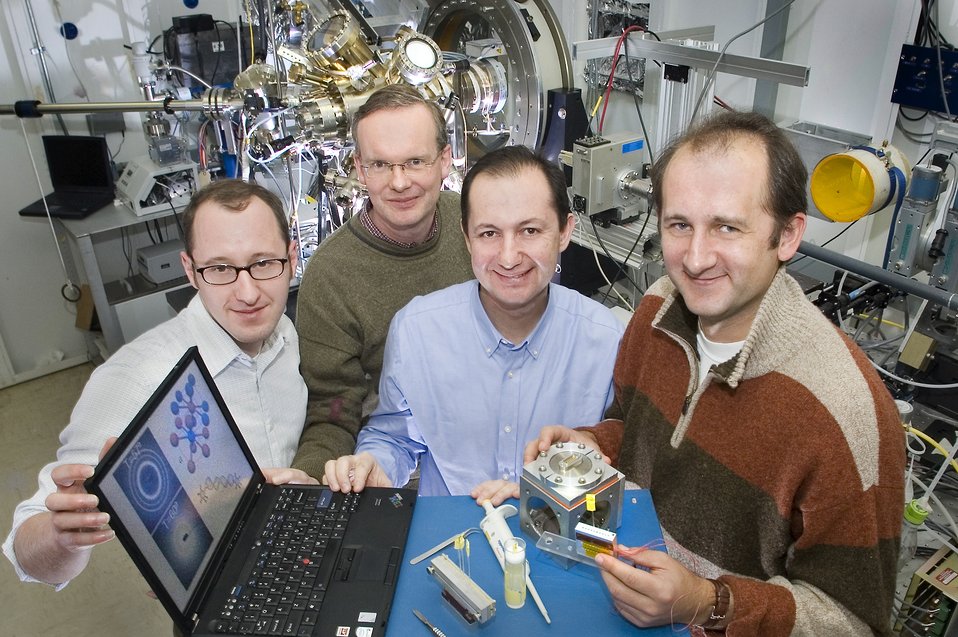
SCIENTISTS AT BNL CENTER FOR FUNCTIONAL NANOMATERIALS -1ST TIME USED DNA - GUIDE THE CREATION THREE-DIMENSIONAL, ORDERED CRYSTALLINE STRUCTURES OF NANOPARTICLES (PARTICLES WITH DIMENSIONS MEASURED IN BILLIONS OF A METER)

AT BNL, IN ORDER TO ACHIEVE ORDER CRYSTALS, THE SCIENTIST ALTAR THE PROPERTIES OF DNA AND BORROW SOME TECHNIQUES KNOWN FOR TRADITIONAL CRYSTALS. THEY HEAT SAMPLES OF DNS LINKED PARTICLES AND THEN COOL THEM BACK TO ROOM TEMPERATURE. THIS THERMAL PROCESSING IS SIMILAR TO ANNEALING USED IN FORMING MORE COMMON CRYSTALS MADE FROM ATOMS. RESULTS FROM A VARIETY OF ANALYSIS TECHNIQUES, INCLUDING SMALL ANGLE X-RAY SCATTERING AND DIFFERENT TYPES OF OPTICAL SPECTROSCOPES AND ELECTRON MICROSCOPY AT THE CENTER FOR FUNCTIONAL NANOMATERIALS, WERE COMBINED TO REVEAL THE DETAILS OF THE ORDERED STRUCTURES AND THE UNDERLYING PROCESSES FOR THEIR INFORMATION. IN ADDITION, THE CRYSTALS ARE EXTRAORDINARILY SENSITVE TO THERMAL EXPANSION-100 TIMES MORE SENSITIVE THAN ORDINARY MATERIALS, PROBABLY DUE TO THE HEAT SENSITIVITY OF DNA. THE ABILITY TO EFFECT LARGE CHANGES IN THESE PROPERTIES UNDERLIES MANY POTENTIAL APPLICATIONS SUCH AS ENERGY CONVERSION AND STORAGE, AS WELL AS TECHNOLOGY.